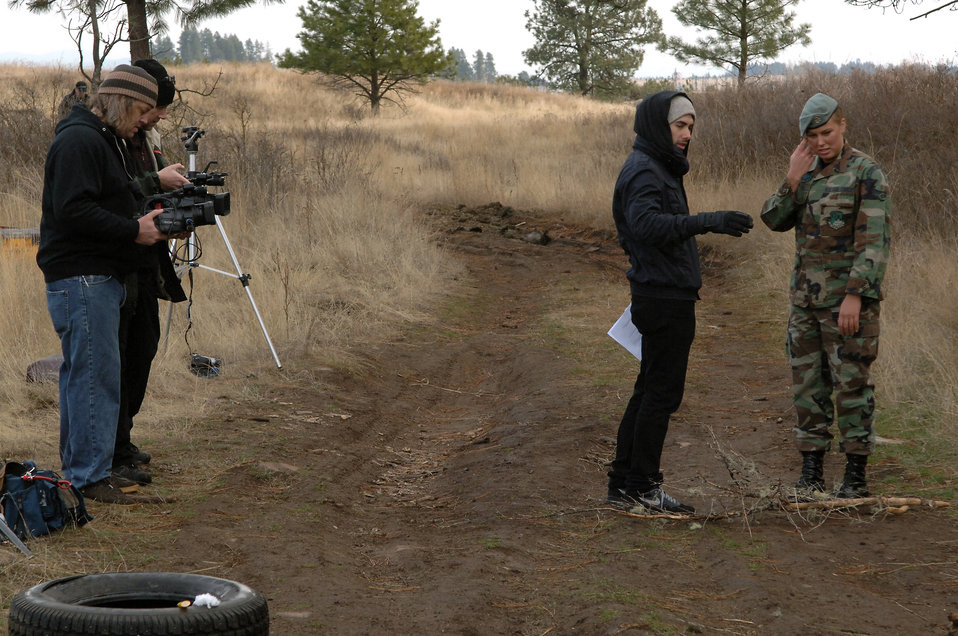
MTV visits Fairchild Air Force Base

Airman 1st Class Tiffany Zaloudek receives instruction from Rich Browd, MTV director of the